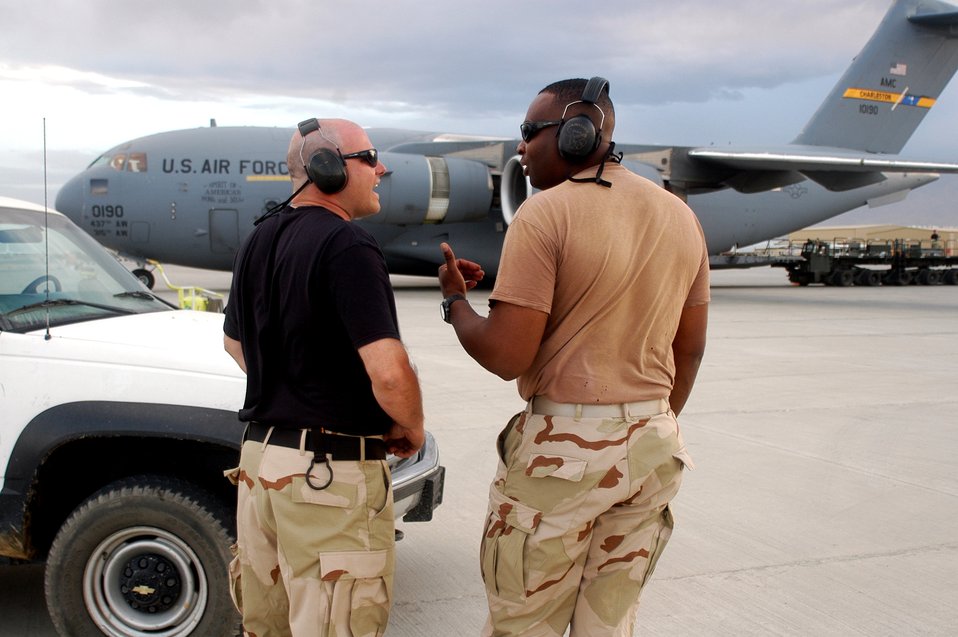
Transient alert provides Bagram its staying power

Staff Sgt. Gordon Torrey (left) and Tech. Sgt. Michael Leach coordinate aircraft parking on the ramp, having just parked a C-17 Globemaster III delivering cargo on Tuesday, May 16, 2006, to Bagram Air Base, Afghanistan. The two sergeants are crew chiefs in the transient alert section of the 455th Expeditionary Maintenance Squadron, deployed here in support of Operation Enduring Freedom.